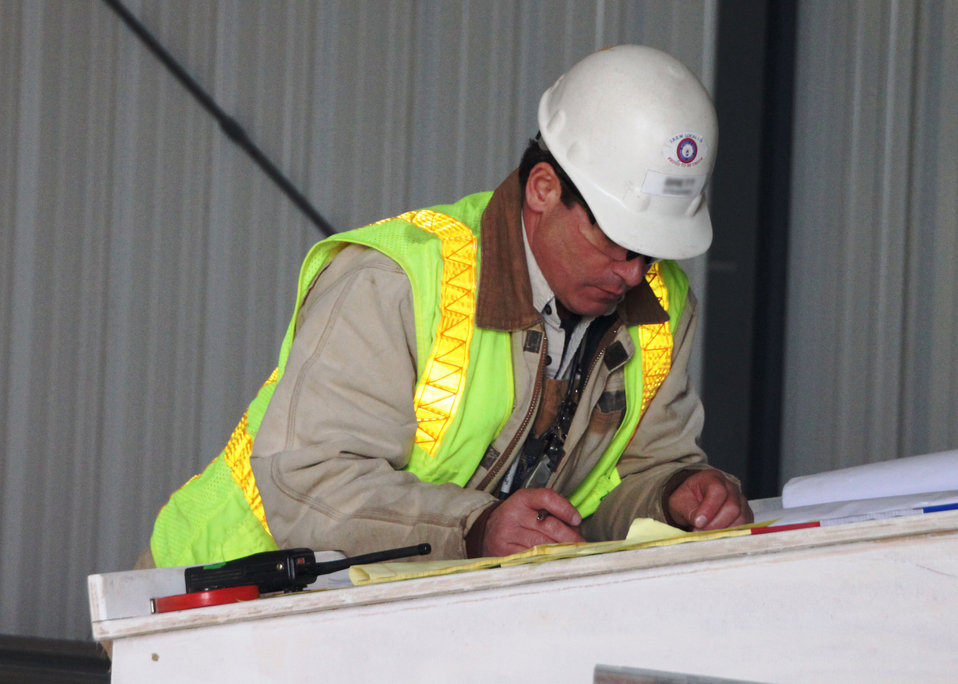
Electrician Reviews DX Groundwater Treatment Facility Plans

An electrician reviews plans for installations in the process building of the DX Groundwater Treatment Facility, one of two treatment facilities CH2M HILL is constructing with $20 million in Recovery Act funding to treat contaminated groundwater at the Hanford Site.